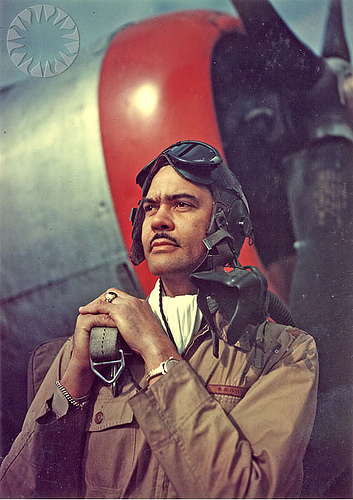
Benjamin O. Davis Jr.: Commanded